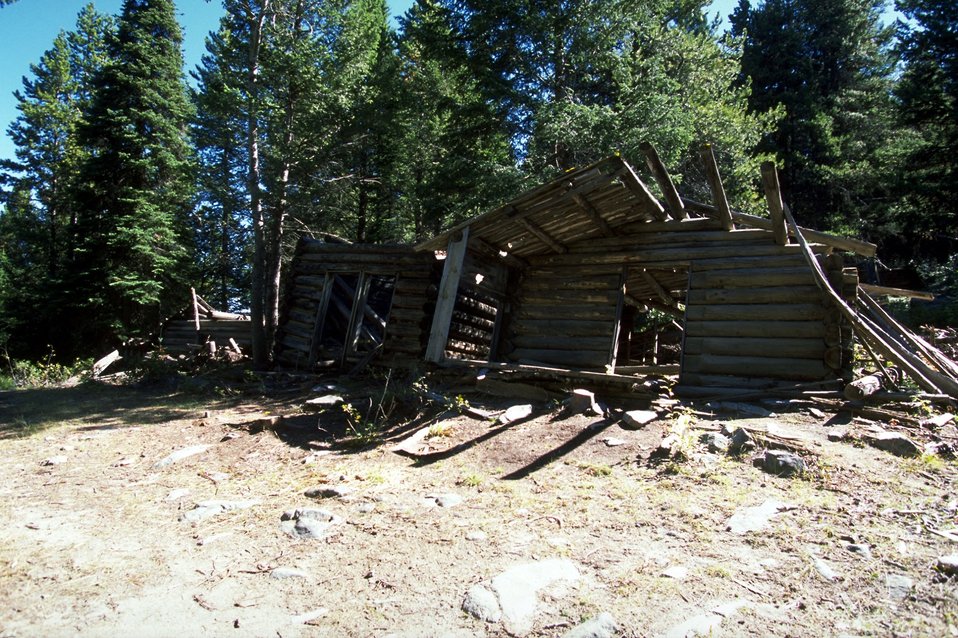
Coloma Ghost Town-collapsed cabin